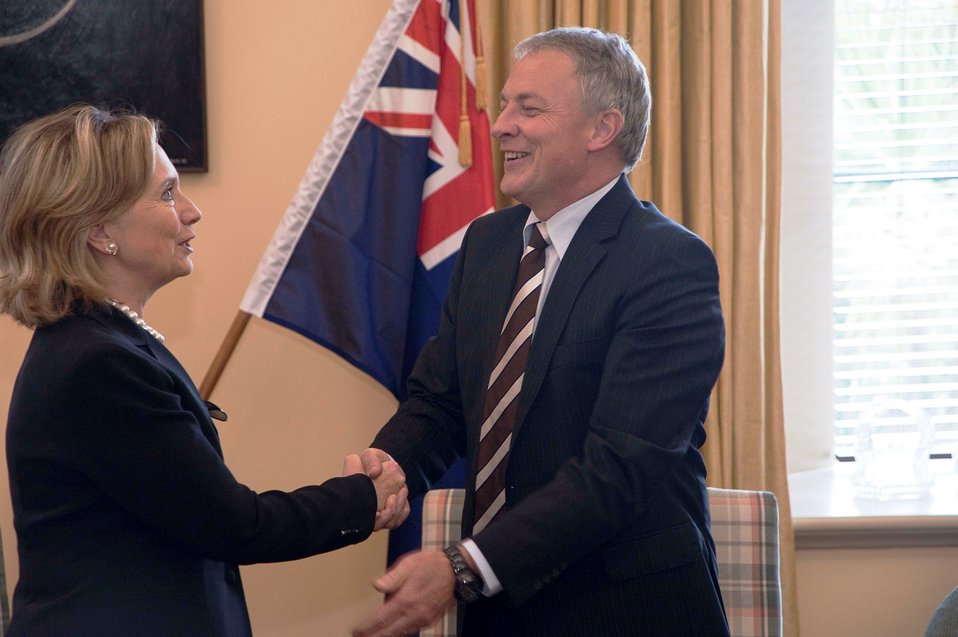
Secretary Clinton Shakes Hands With New Zealand Opposition Leader Goff

U.S. Secretary of State Hillary Rodham Clinton shakes hands with New Zealand Opposition Leader Philip Goff in Wellington, New Zealand, on November 4, 2010.